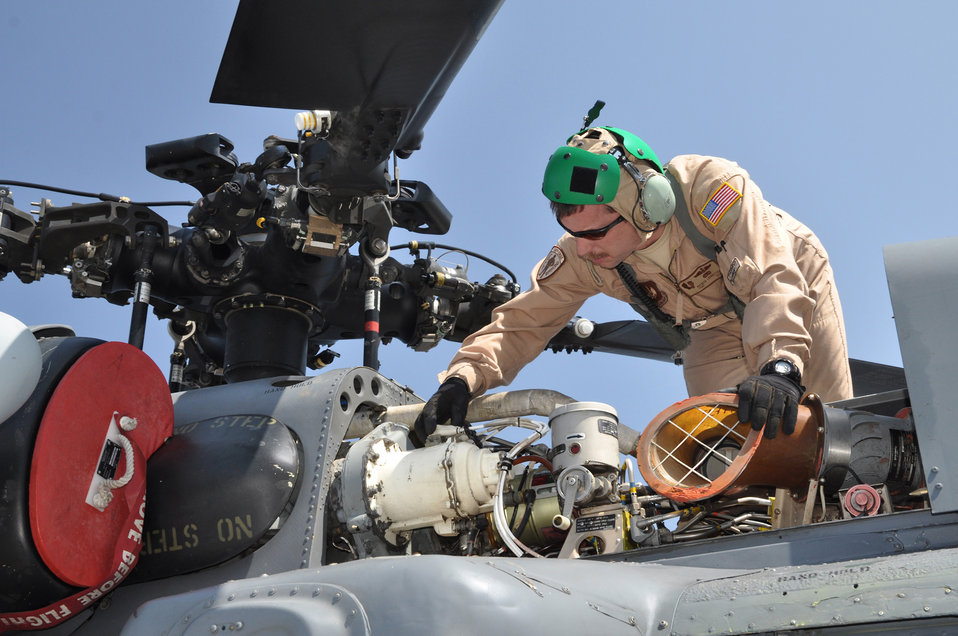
Air Force on Deck!

110327-N-7293M-014 MEDITERRANEAN SEA (Mar. 27, 2011) Embarked aboard amphibious transport dock USS Ponce (LPD 15), U.S. Air Force Tech. Sgt. Patrick Ledbetter pre-flights the engine on an HH-60G Pave Hawk helicopter from the 56th Rescue Squadron. Based out of RAF Lakenheath, England, a detachment from the 56th is aboard Ponce in order to provide combat search and rescue support for coalition forces flying in support of Operation Odyssey Dawn, the coalition effort to bring humanitarian relief to the Libyan people. Ponce is part of Kearsarge Amphibious Ready Group, supporting maritime security operations and theater security cooperation efforts in the U.S. 6th Fleet area of responsibility.